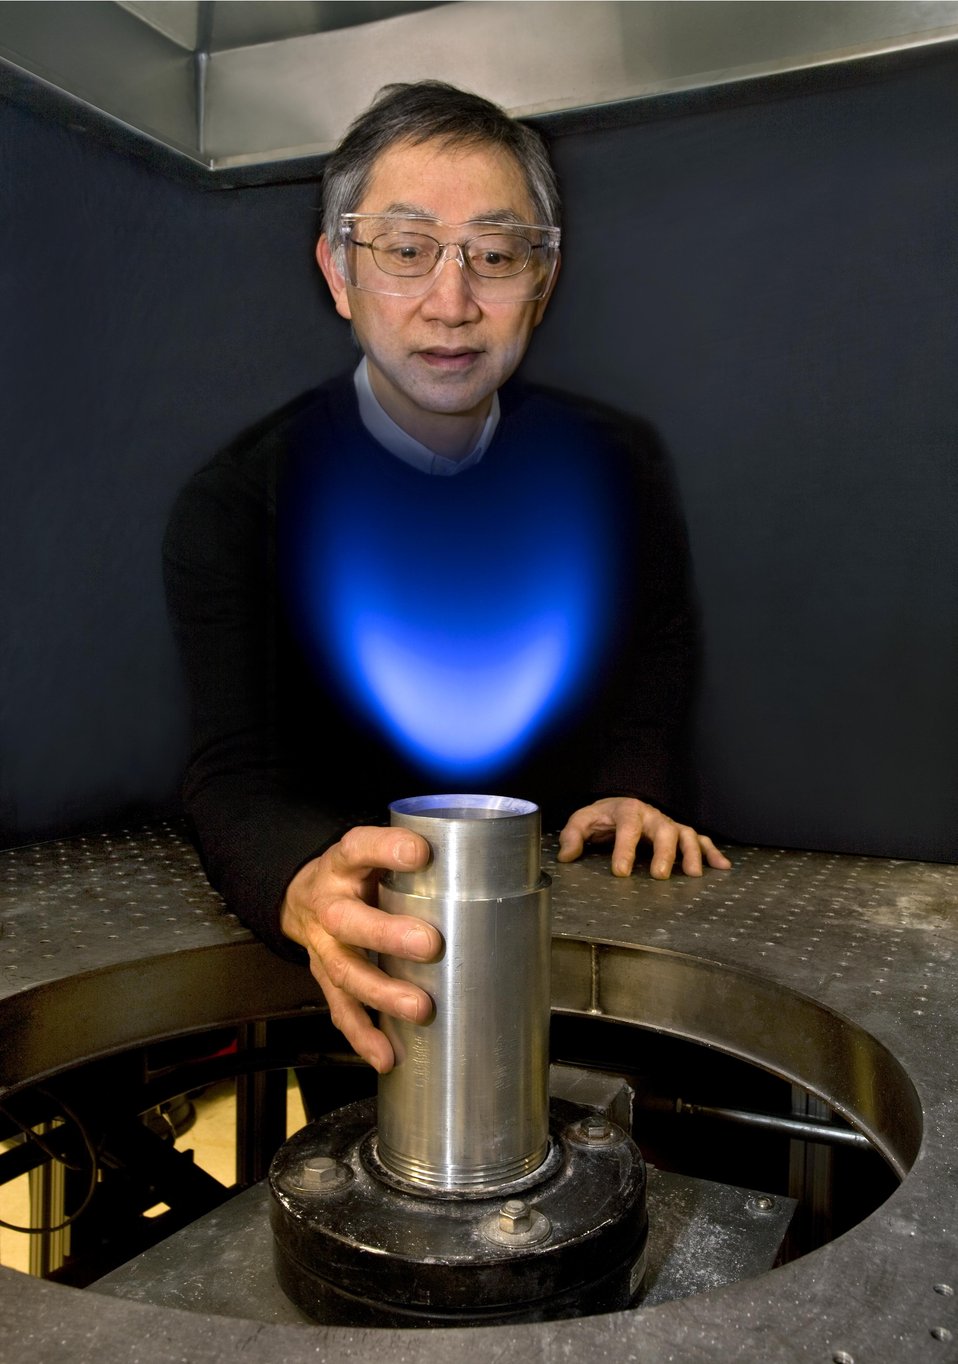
At the Lawrence Berkeley National Laboratory, Robert Cheng views a Low-Swirl Injector (LSI) flame. He is touching the burner, showing that is stays cool because the flame is completely lifted from its body.
An experimental gas turbine simulator equipped with an ultralow-emissions combustion technology called LSI has been successfully using pure hydrogen as a fuel, a milestone that indicates a potential to help eliminate millions of tons of carbon dioxide and thousands of tons of NOx from power plants each year.